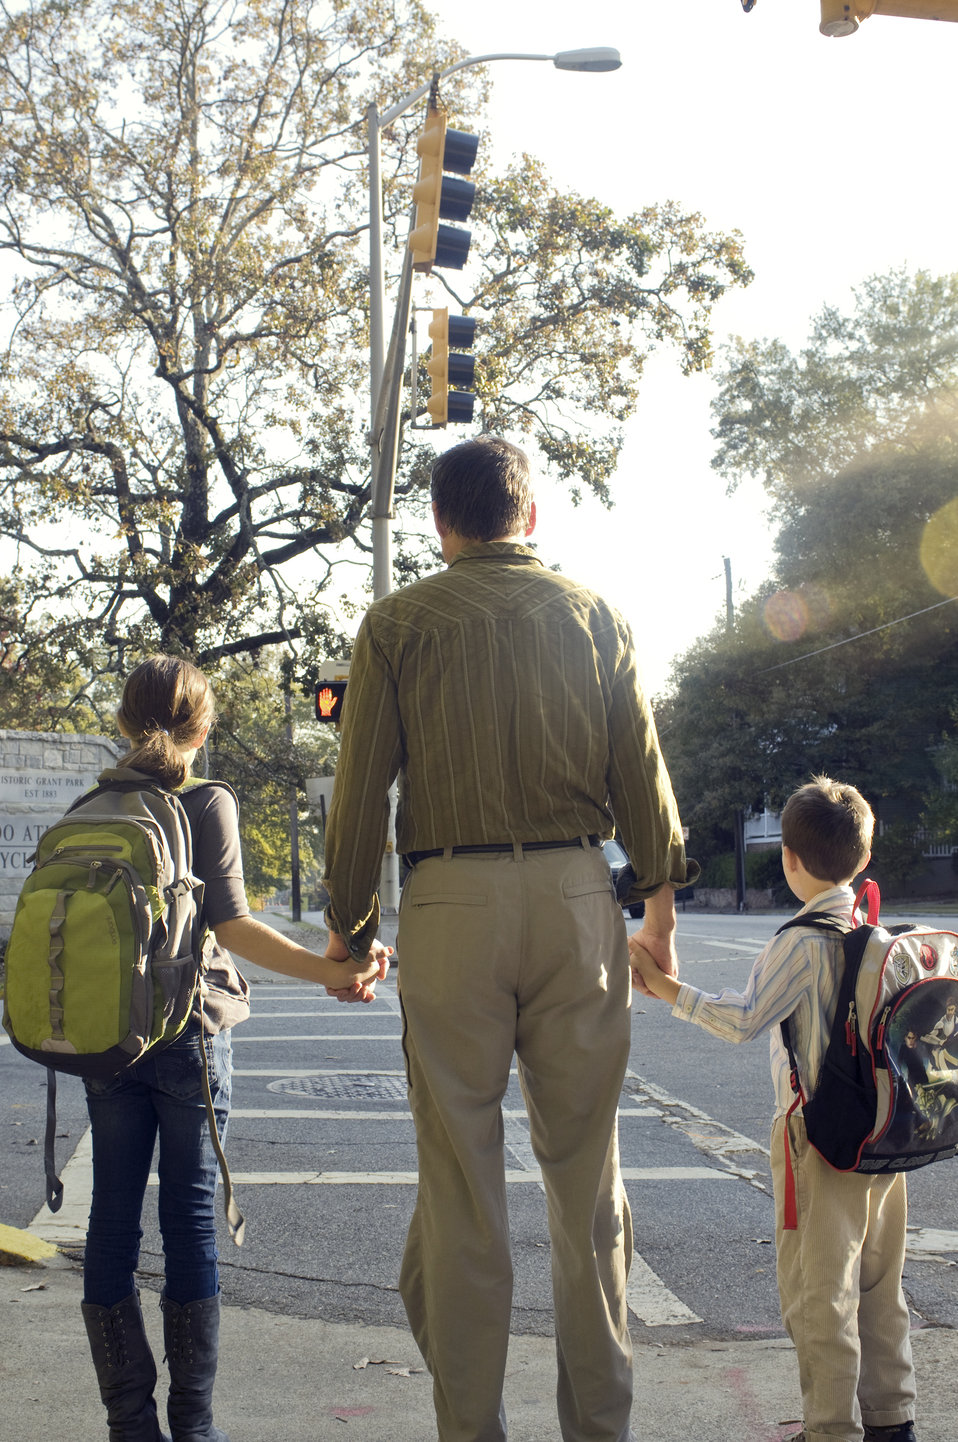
A father walking with his children

This father was shown walking on a Georgian city street, while holding hands with his two young children, his son to his right, and his daughter to his left. The three had paused at an intersection while waiting for the crosswalk signal to indicate permission to cross the street.